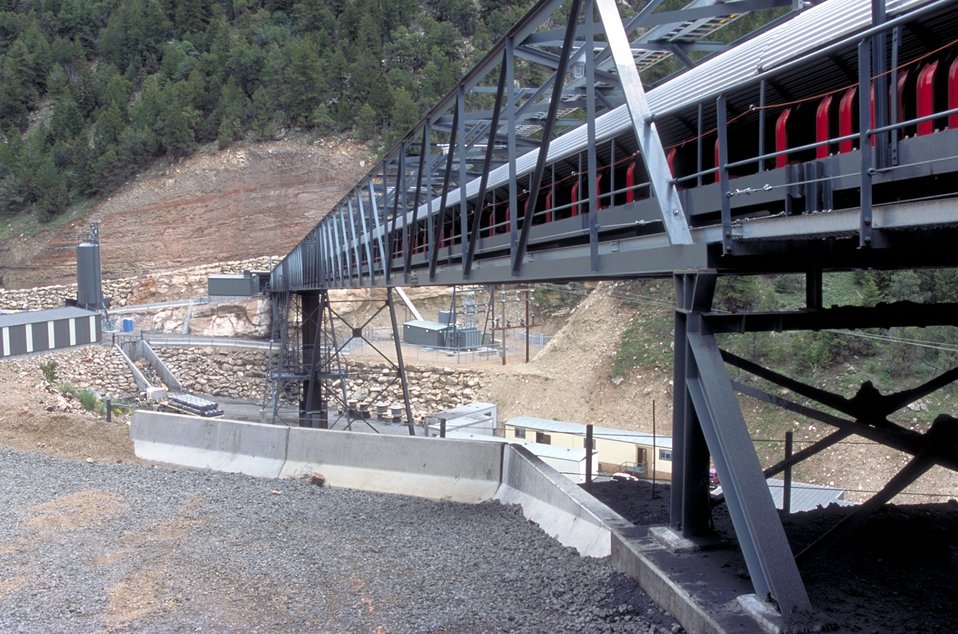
Coal production near Price, Utah.